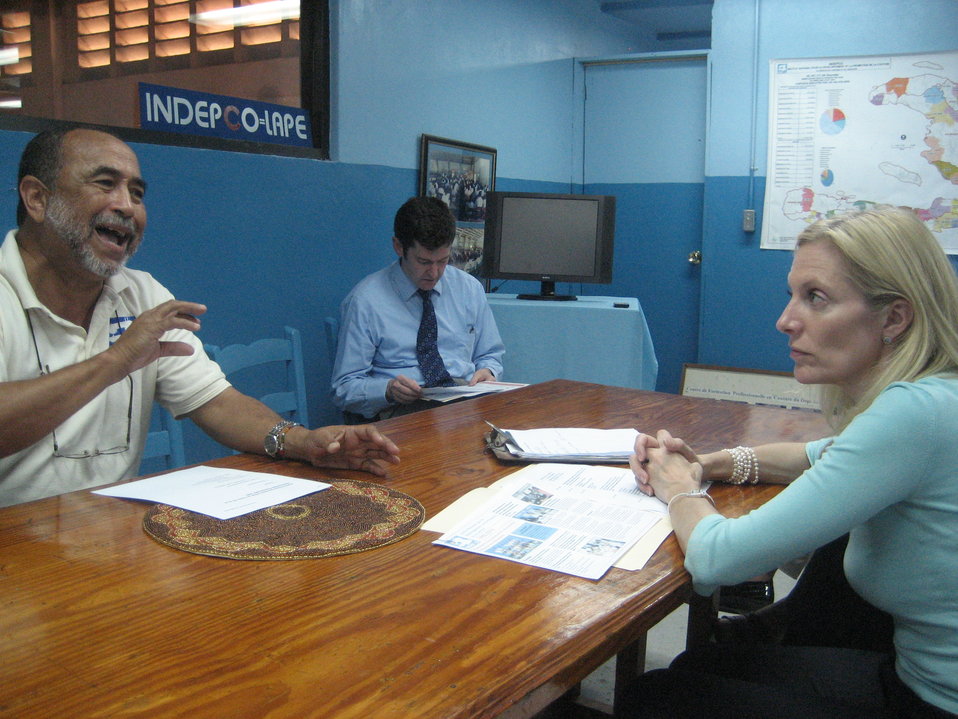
Under Secretary Lael Brainard visits Haiti, 7/29/2010

While in Haiti, Under Secretary Lael Brainard toured the temporary production facilities of Institut National pour le Développement et la Promotion de la Couture (INDEPCO), a network of micro-entrepreneurs in the garment sector, in Cité Soleil, Port au Prince. Here, she meets with Hans Garoute, President of INDEPCO.